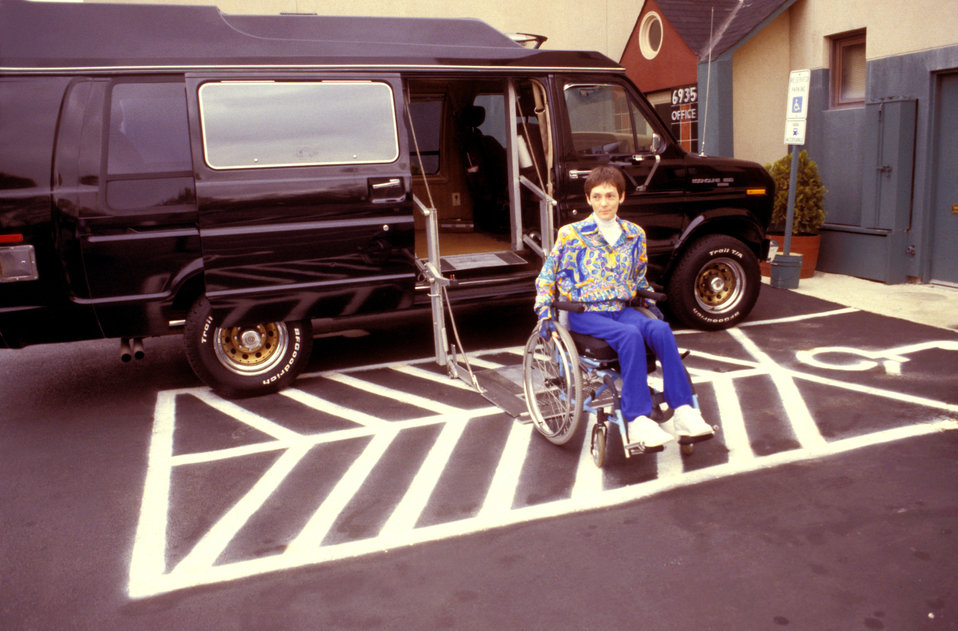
This was the fourth of six images (PHIL# 9068 - 9073) depicting a wheelchair-seated woman was shown in the process of exiting a wheelchair lift-equipped van parked in a van-accessible parking space. The space displayed both a pole-mounted sign, as well as a designated ground symbol, each adorned with the international symbol of accessibility. In addition, a wide aisle next to the van's parking space had been defined by striping on the ground, allowing ample space for the person using the side-mounted lift to exit safely and efficiently. The images showed the individual having first backed onto the lift, then descending to the ground. The woman then exited onto the striped space next to the van.